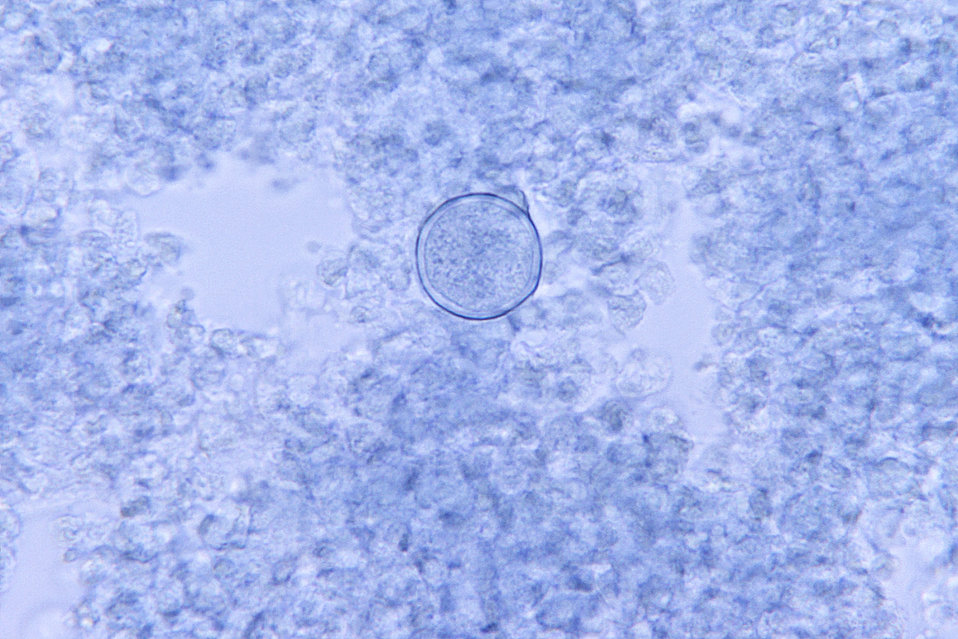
This photomicrograph revealed the presence of a round, thick-walled, spherule-staged Coccidioides immitis fungal organism.